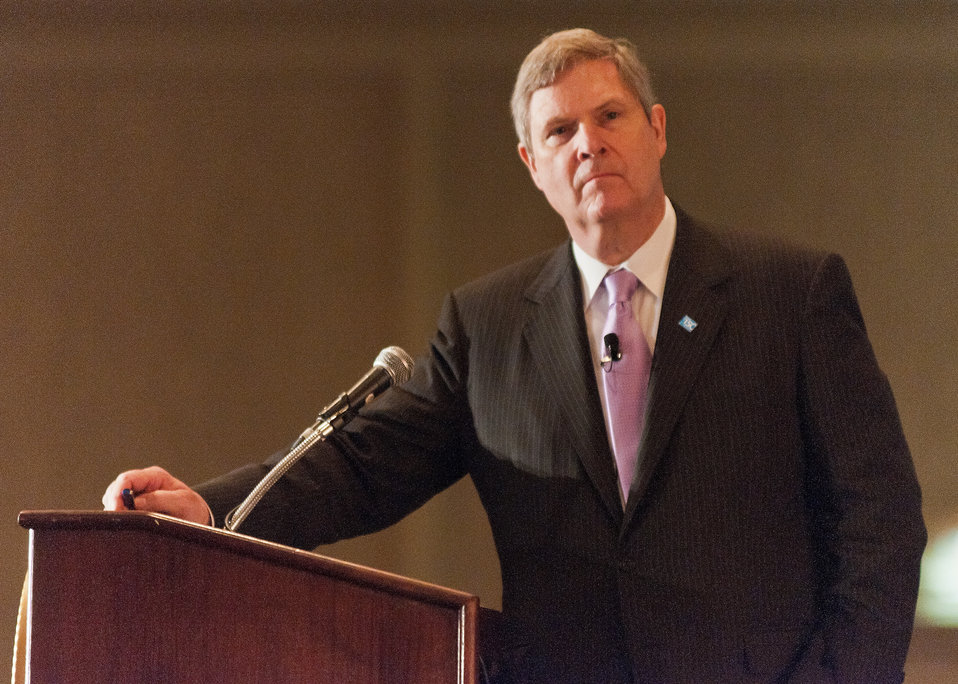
Agriculture Secretary Tom Vilsack (left) moderates a panel of former Secretaries of Agriculture at the 2012 Agricultural Outlook Forum, “Moving Agriculture Forward” in Arlington, VA. On Thursday, February 23, 2012.